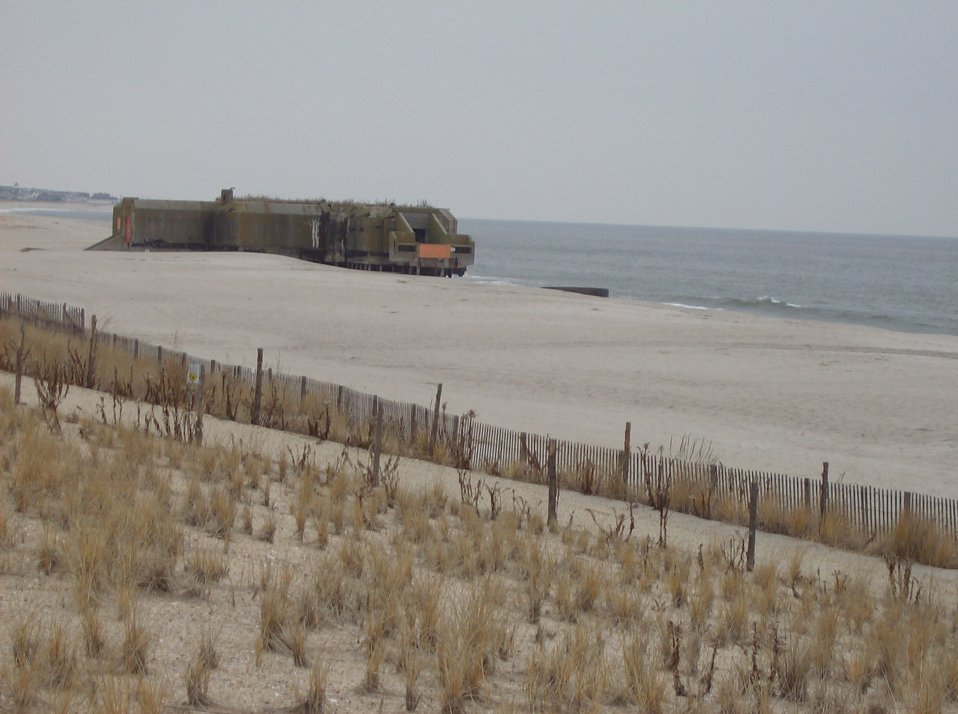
World War II Coast Artillery bunker exposed by retreating dune line at Cape May.